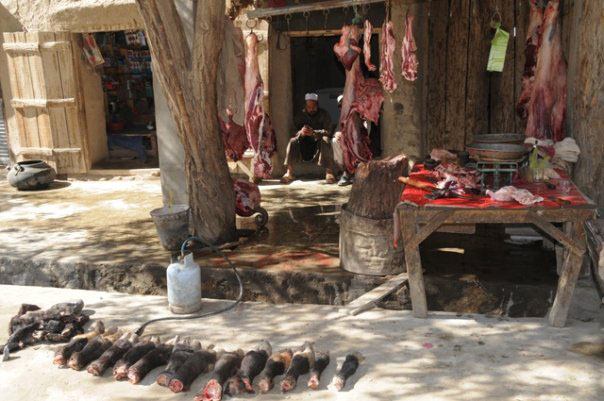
Cultural difference

An Afghan butcher waits for customers at his storefront in Ghazni province, Afghanistan, 2009.